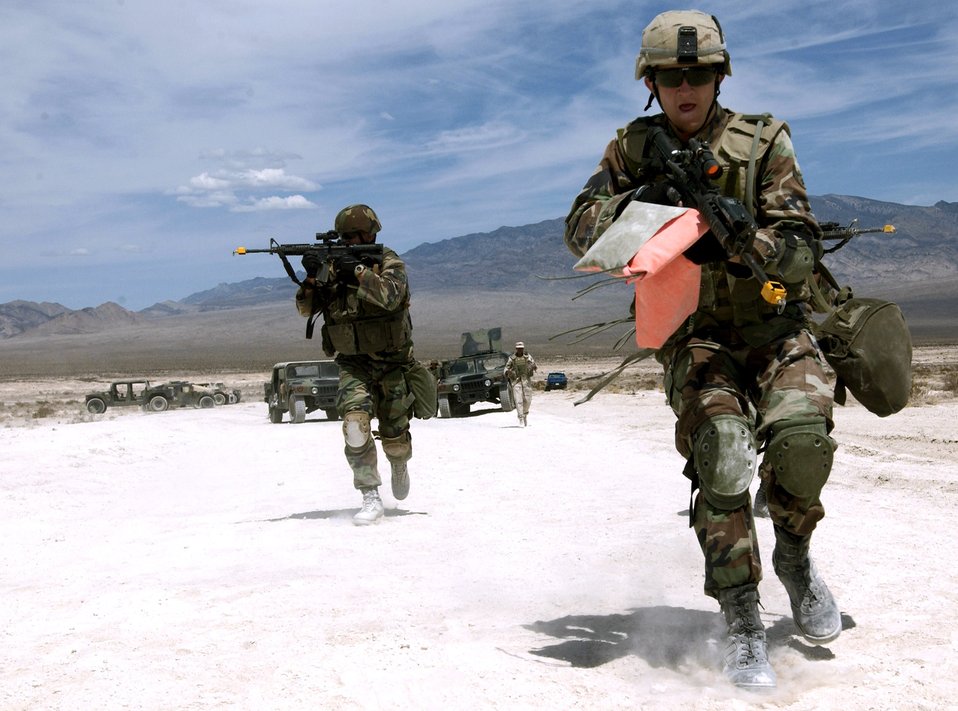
Taking control

Airmen attending an expeditionary readiness training course near Creech Air Force Base, Nevada, secure a landing zone Aug. 13 during a simulated security mission.